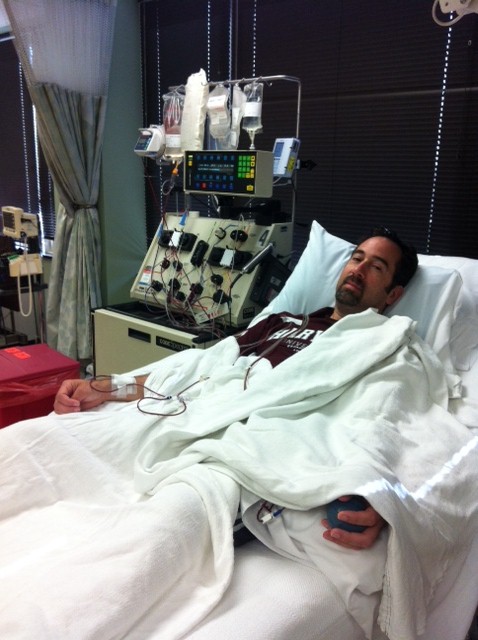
Airman sends life across the ocean

Paul J. Firman provides a peripheral blood stem cell donation in Washington, D.C. The donation went to an anonymous patient in Italy as part of the Department of Defense Marrow Donor Program. Firman is a retired senior master sergeant who works at the Air Force Negotiation Center of Excellence.